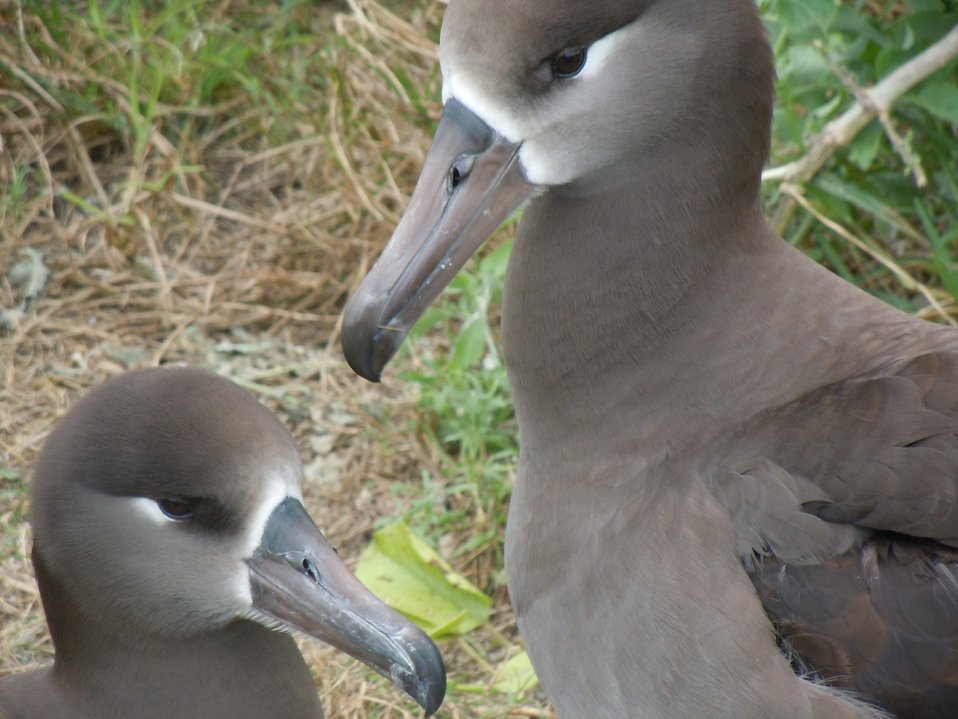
black-footed albatross pair

Midway Atoll National Wildlife Refuge
March 2012